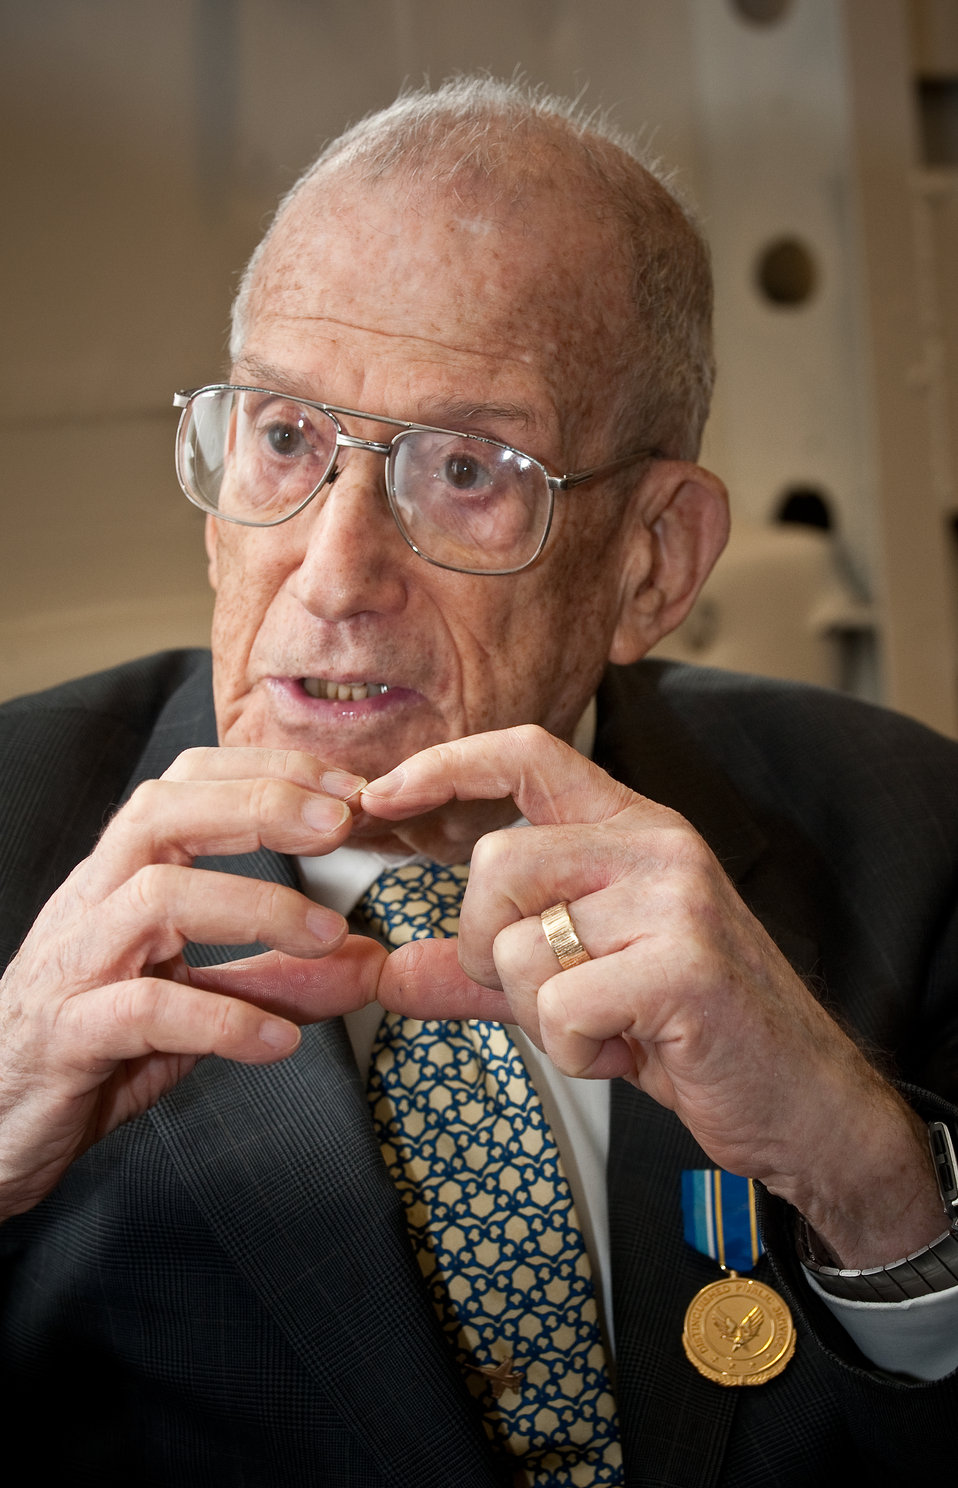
Air Force Week New York City Public Service Award

Mr. Chester Burger talks about his experiences that lead to his being awarded the Air Force Distinguished Public Service Award on Aug. 24, 2010, while aboard the USS Intrepid. Mr. Chester Burger served as an Air Force advocate under the Public Affairs Advisory Group in New York City for more than 15 years. He worked to bring awareness to the contributions of servicemen in NYC. His award ceremony followed the Air Force Week New York City proclamation ceremony on the USS Intrepid. The event at the Intrepid Sea, Air & Space Museum was highlighted by a six-ship flyover by the USAF Thunderbirds. The Honorable Michael Donley, Secretary of the Air Force attended, along with General Raymond Johns, Commander of Air Mobility Command. The Police Commissioner of the City of New York, the Honorable Raymond Kelly, represented NYC. Mr. Greg Kelly of